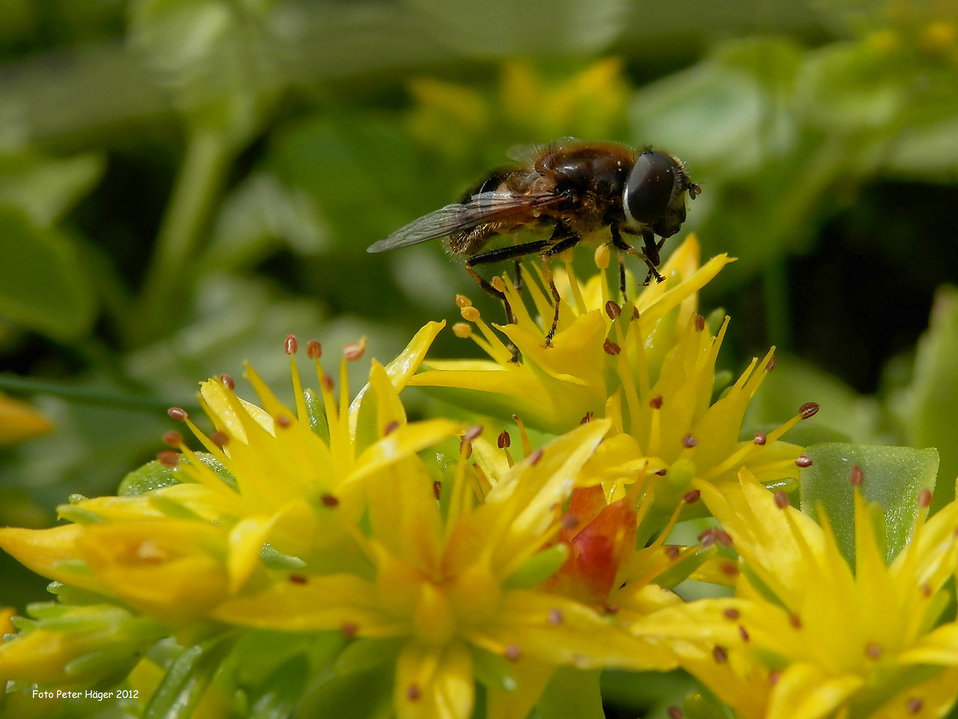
Flower fly

On a yellow flower.